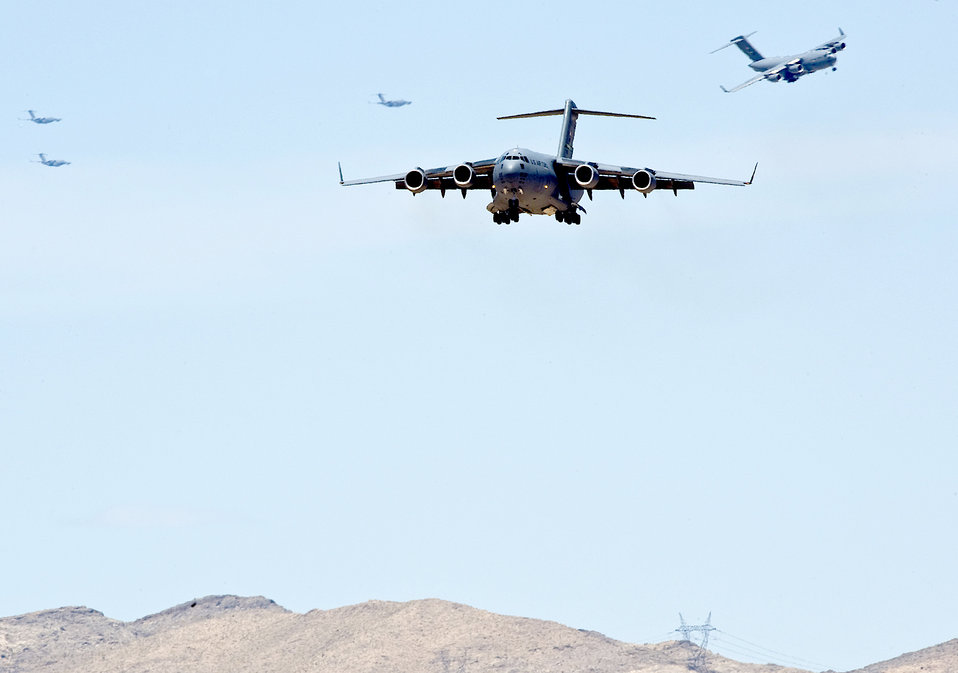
Mobility Air Forces exercise

C-17 Globemaster IIIs prepare to land at Nellis Air Force Base, Nev., after participating in the Mobility Air Forces exercise over the Nevada Test and Training Range May 19, 2010. C-17